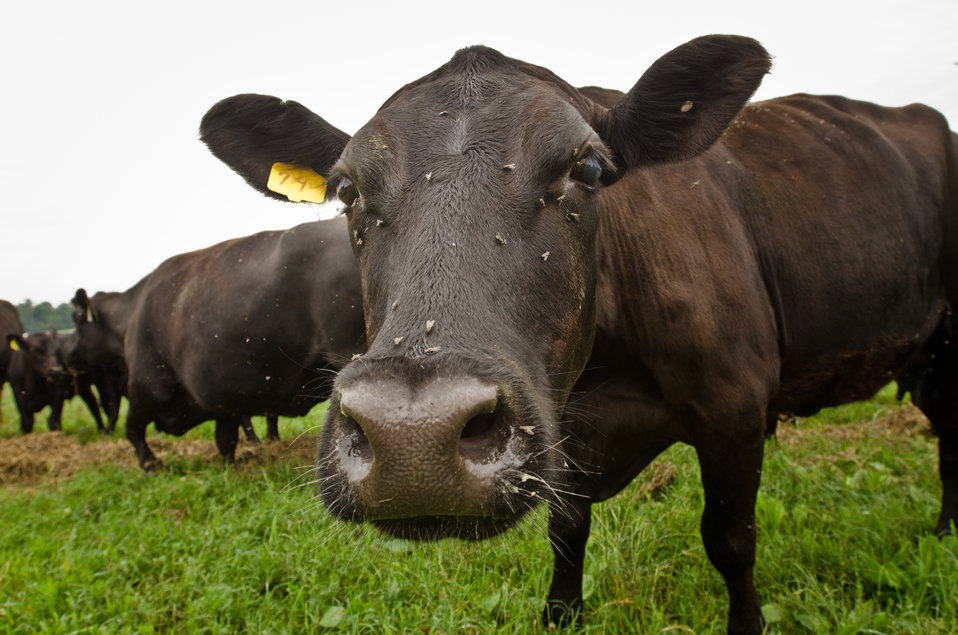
Black Angus cows and calves graze organic pastures, and for added nutrition and variety, they enjoy a daily feeding of sweet silage at Nick’s Organic Farm, owned by Nick Maravell, in Adamstown, MD on Friday, July 12, 2013. The white plastic wrapped bales of pasture grass and alfalfa have been fermenting for months to create sweet silage that stores well and can be used to feed cattle at varying amount all year long. The fermentation process sweetens the taste and increases the vitamin levels. The farm produces Black Angus beef, chicken, turkey, eggs, hay, soybeans, corn, alfalfa, orchard grass, rye; and other crops. The cattle are 100% grass-fed receiving certified organic pasture, certified organic hay (in winter), water and mineral salts mixed with sea kelp. The cattle are not fed hormones, antibiotics or animal products. Poultry feed from grain is ground from organic grain. The poultry also graze on organic pastures. The farm has conducted on-farm research with federal, state and non-profit agencies to refine organic practices. An organization such as the U.S. Department of Agriculture (USDA) Agricultural Research Service (ARS) center in Beltsville has been able to conduct research to improve organic crops and to breed and manage the cattle so that they have.